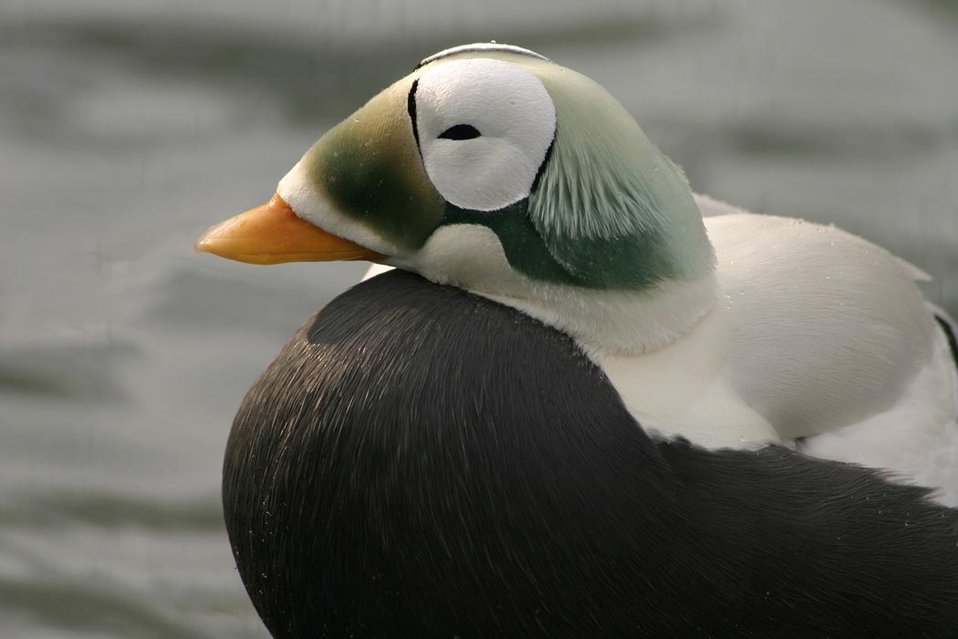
Threatened spectacled eider male (Somateria fischeri), Alaska SeaLife Center, Seward, Alaska